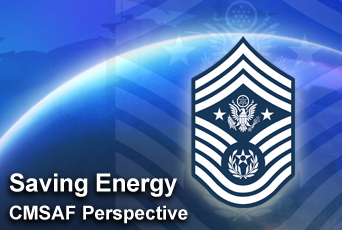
Saving energy is the focus of the latest Enlisted Perspective by Chief Master Sgt. of the Air Force Rodney J. McKinley.